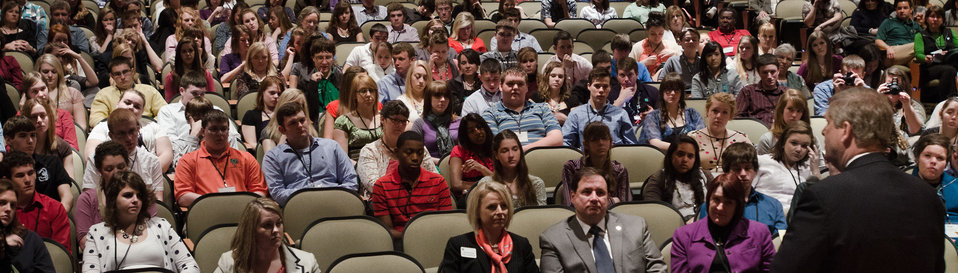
Agriculture Secretary Tom Vilsack speaks with 4-H members at the National 4-H Youth Center in Chevy Chase, MD, on Monday, March 26, 2012. 'For almost 100 years, USDA and 4-H have partnered to produce some of our nation's best and brightest, including farmers and ranchers who have supported the American economy and put food on our tables,' Vilsack said. 'You all are tomorrow's leaders. We need you to think big, innovate and help tackle the important challenges standing between us, a stronger middle class and a stronger nation.'